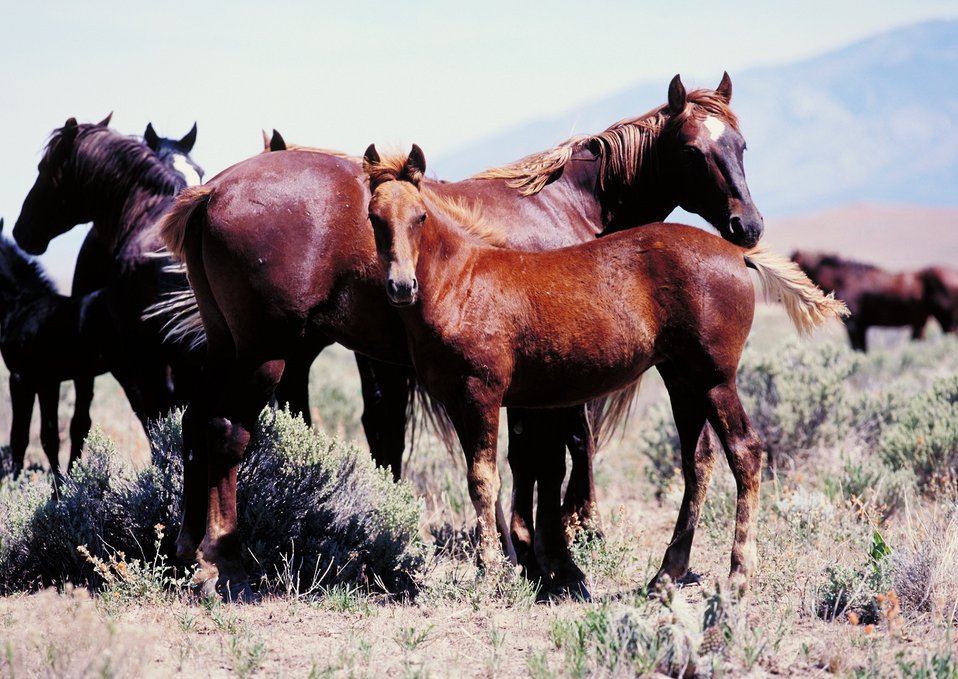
Onaqui Herd near Dugway, Utah.